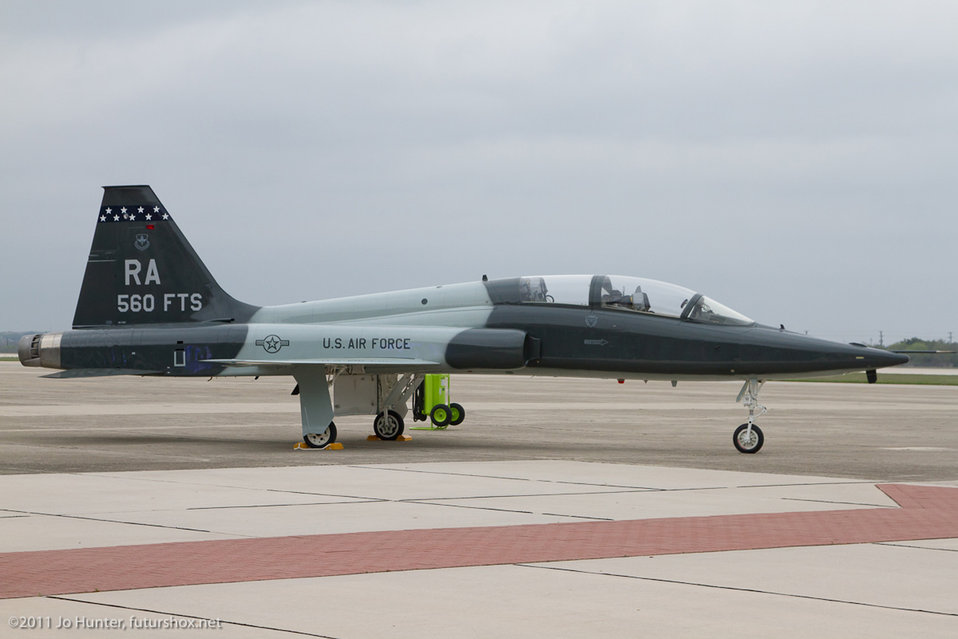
T-38

A T-38 Talon sits on the flightline at Randolph Air Force Base, Texas, March 17, 2011, during a ceremony commemorating the aircraft's 50th anniversary.